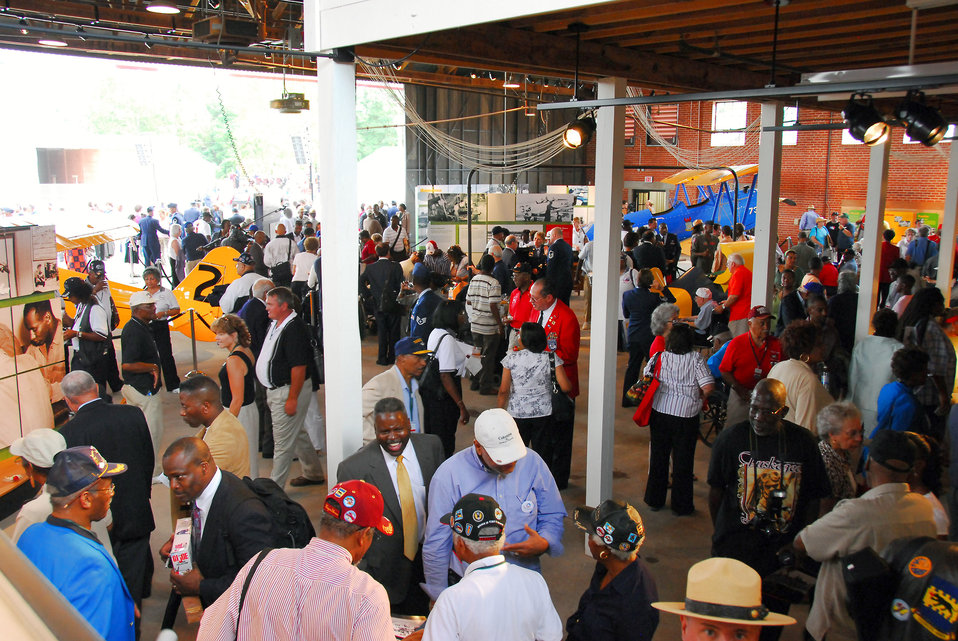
Historic homecoming for Tuskegee Airmen as site opens

After the opening ceremony of the Tuskegee Airmen National Historic Site Oct. 10 at Moton Field, Ala., visitors explore the interpretive and static displays housed the in the only remaining original hangar of the